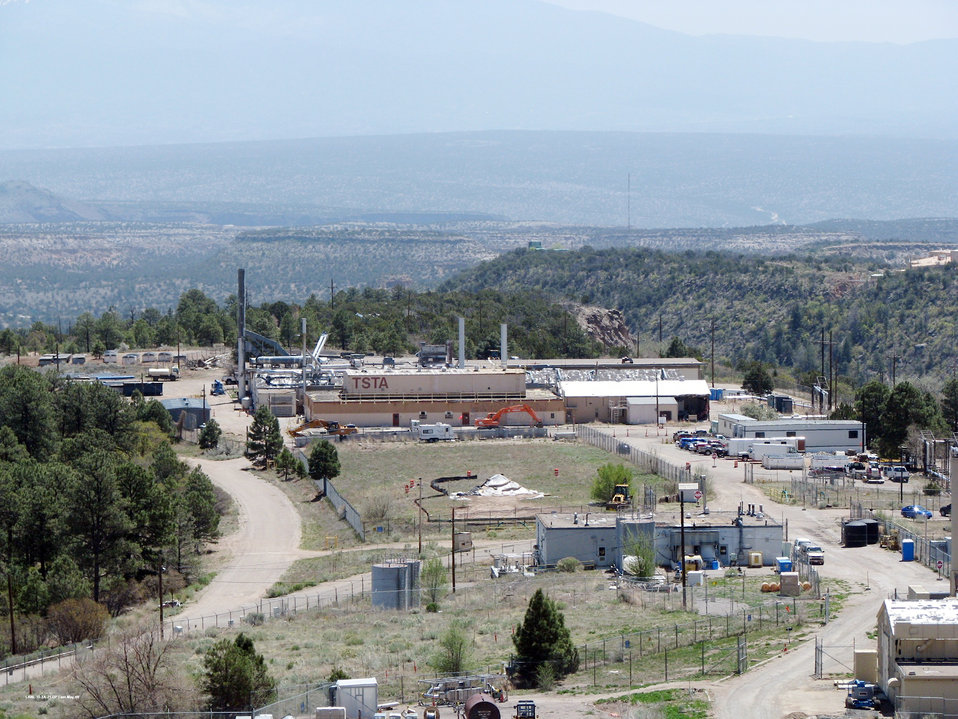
Before photo of DP East area of Los Alamos National Laboratory's Technical Area 21

These photos show the DP East area of Los Alamos National Laboratory’s Technical Area 21 before the demolition of 10 buildings, left, and after demolition.